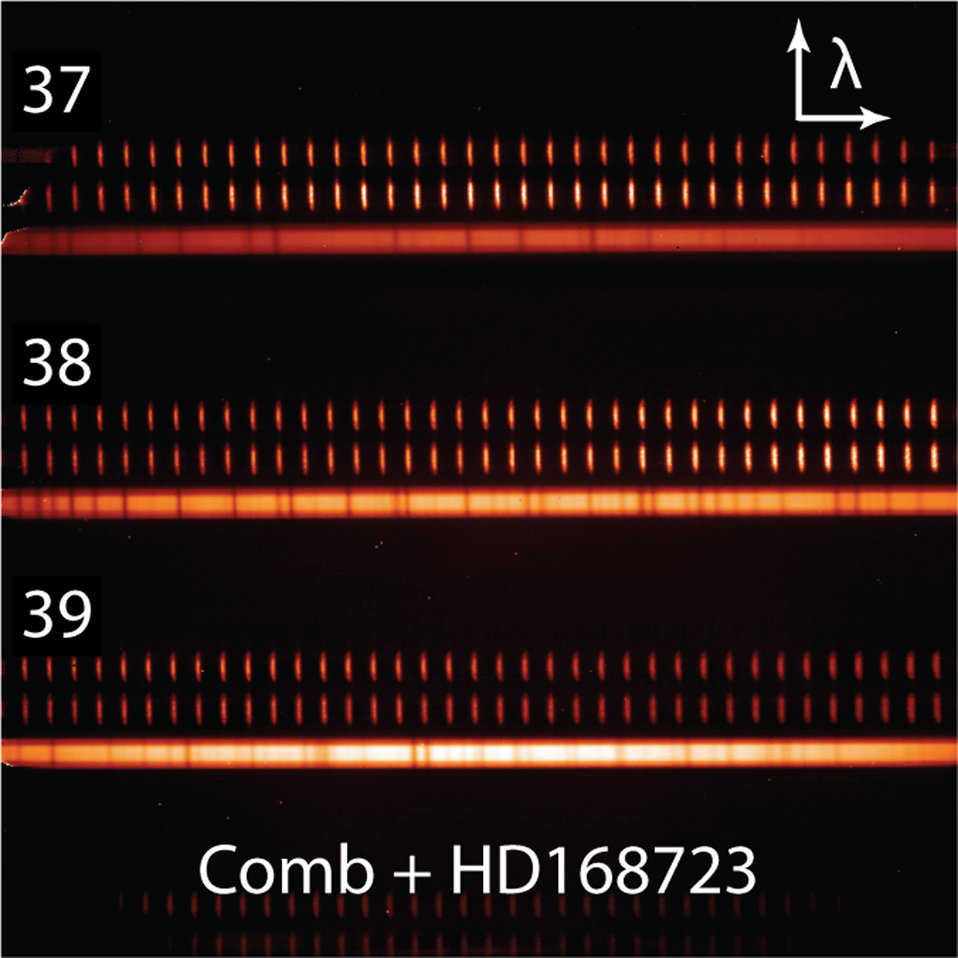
Starlight

NIST researchers and collaborators measured the frequencies, or colors, of infrared starlight (three solid bands with faint tick marks indicating where light is absorbed by the atmosphere) by comparing the missing light to a laser frequency comb reference 'ruler' (sets of bright vertical bars indicating precise wavelengths, which increase from left to right). The three sets of starlight and comb light are shown in false color, from deeper orange (the most light) to orange-white (slightly less light) to black (very little light).